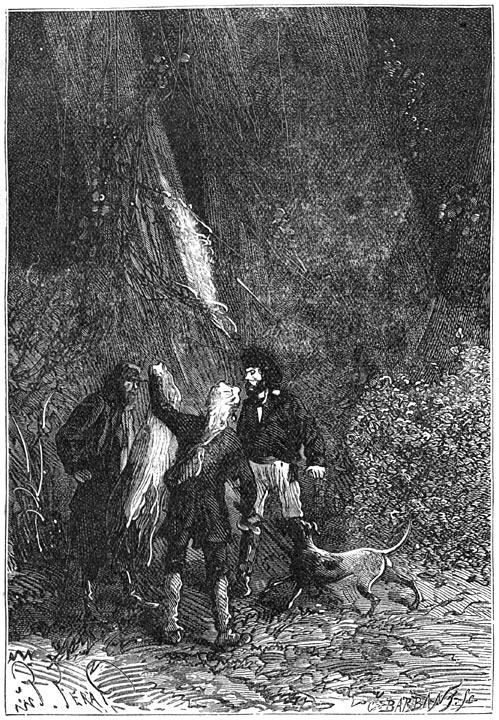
An illustration from Jules Verne's novel 'The Mysterious Island' (1873-74) drawn by Jules Férat. Polski: Ilustracja powieści Juliusza Verne'a 'Tajemnicza wyspa' (tytuł przekładany także jako: Wyspa tajemnicza, 1873-74) autorstwa Julesa Férata. Français : Jules Verne: 'L’Île mystérieuse' (1873-74), dessins par Jules Férat. Orginal description from the book: Français : C’était un morceau de forte toile.